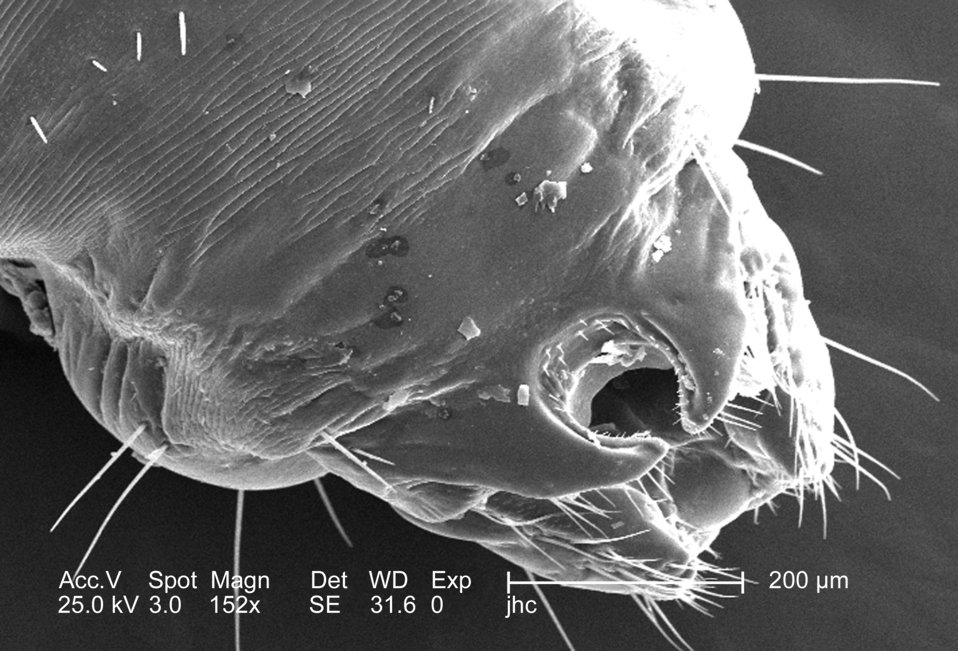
At double the magnification of PHIL #9239, this 2006 scanning electron micrograph (SEM), magnified 152x, revealed the distal tip of the abdominal region of a female body louse, Pediculus humanus var. corporis from a dorsal perspective. Some of the morphologic characteristics seen in this image include the two 'gonopodia', which are located dorsal to the larger two setae-bearing 'claspers'. It is into this notch that the male would insert the 'aedeagus', or penis during the process of copulation. This notch, identifying the louse as a female is observable to the naked eye, whereas, in the male louse, the distal abdomen is rounded, and not concave.